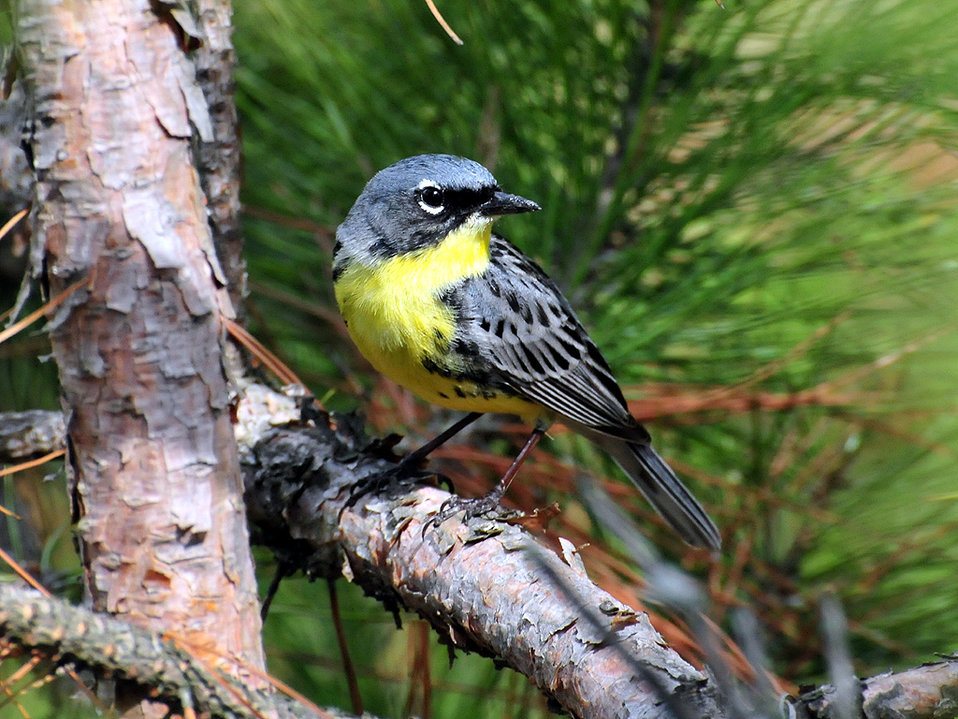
Endangered Kirtland's warbler (Dendroica kirtlandii)

Learn about the historical importance of fire in managing healthy jack pine forests in Michigan, which the endangered Kirtland’s warbler depends: www.fws.gov/endangered/news/episodes/bu-10-2011/kirtlands...